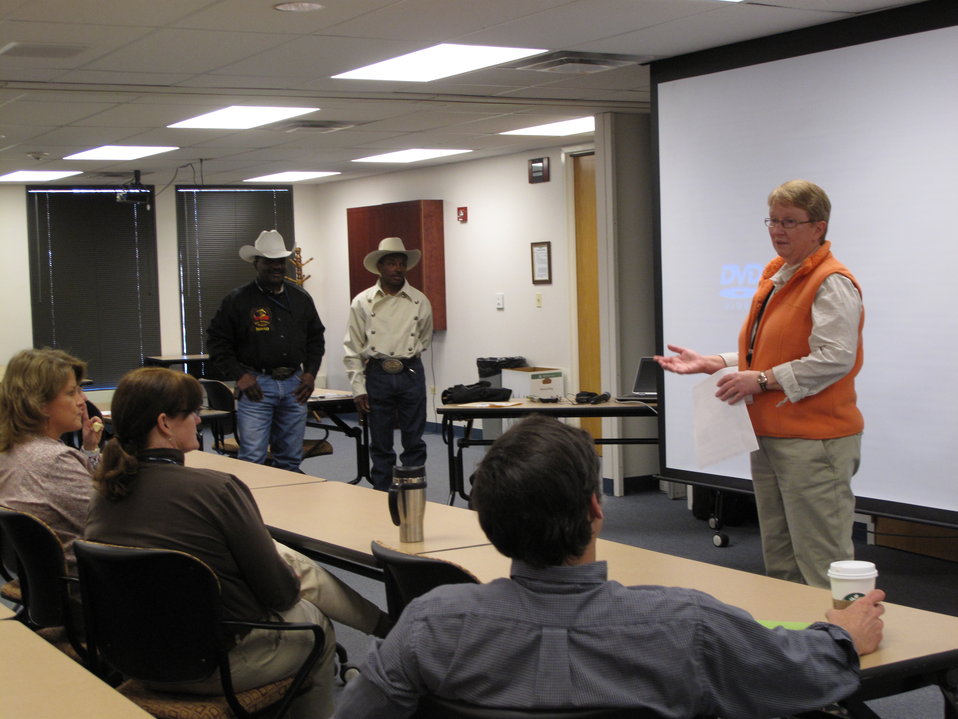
Kathy Dennis introduces Maurice Wade and Charles Sampson

Maurice 'Moe Betta' Wade and Charles Sampson are introduced. Maurice was named the Bill Pickett Rookie of the Year in 1985 and Charles was the first African American to win a world title in the Professional Rodeo Cowboys Association (PRCA).